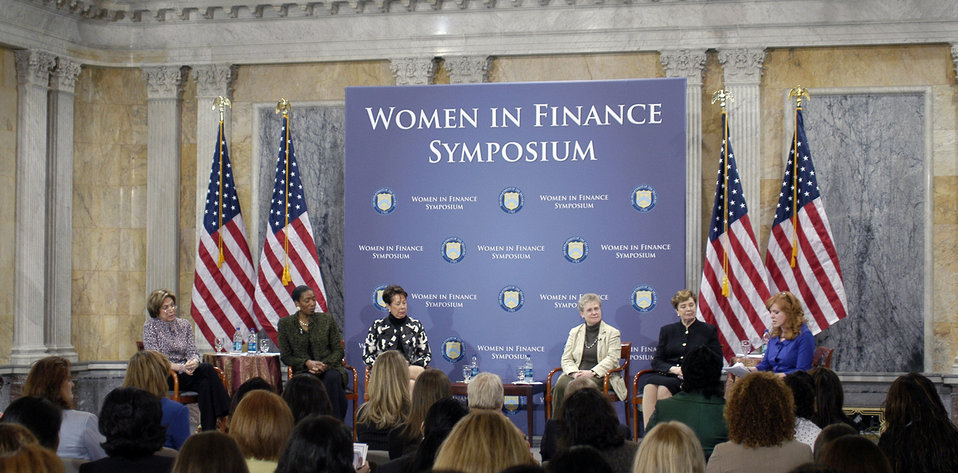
Women in Finance Symposium, 03/29/2010

President’s Economy Recovery Advisor Laura Tyson, Citi PWM CEO Deborah McWhinney, Morgan Stanley Carla Haris, Goldman Sachs' Abby Joseph Cohen and American Council on Education President Molly Broad participated in a panel called “The Landscape and Challenges for Women in Finance,” moderated by Liz Claman of FOX Business Network at the Women in Finance Symposium at Treasury on March 29, 2010.